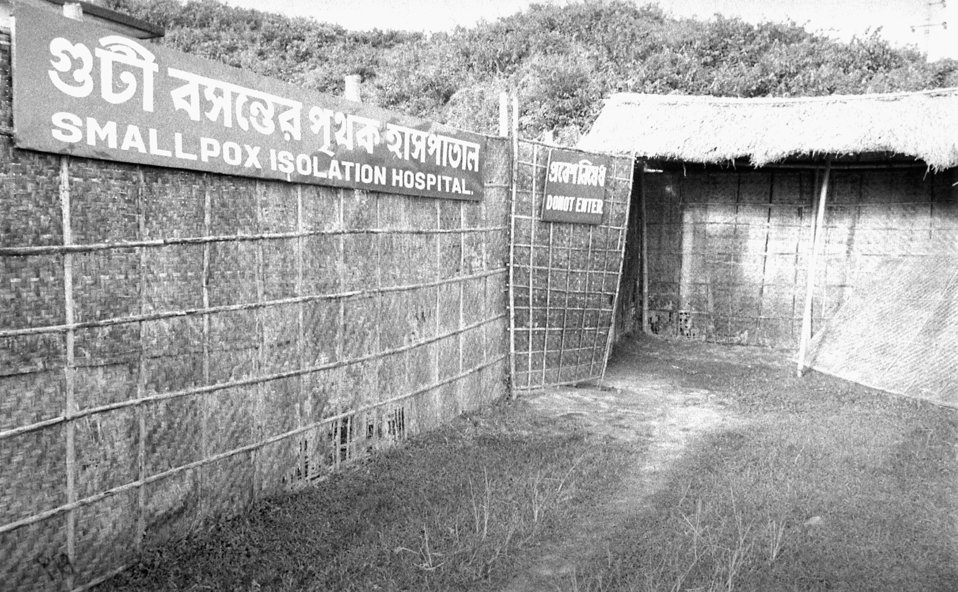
This image, photographed by Dr. Stan Foster, former EIS, Officer, Class of 1962, while he was part of the worldwide Global Smallpox Eradication Campaign of the late 1960s, early 1970s, depicted the exterior of a smallpox isolation hospital in Bangladesh.